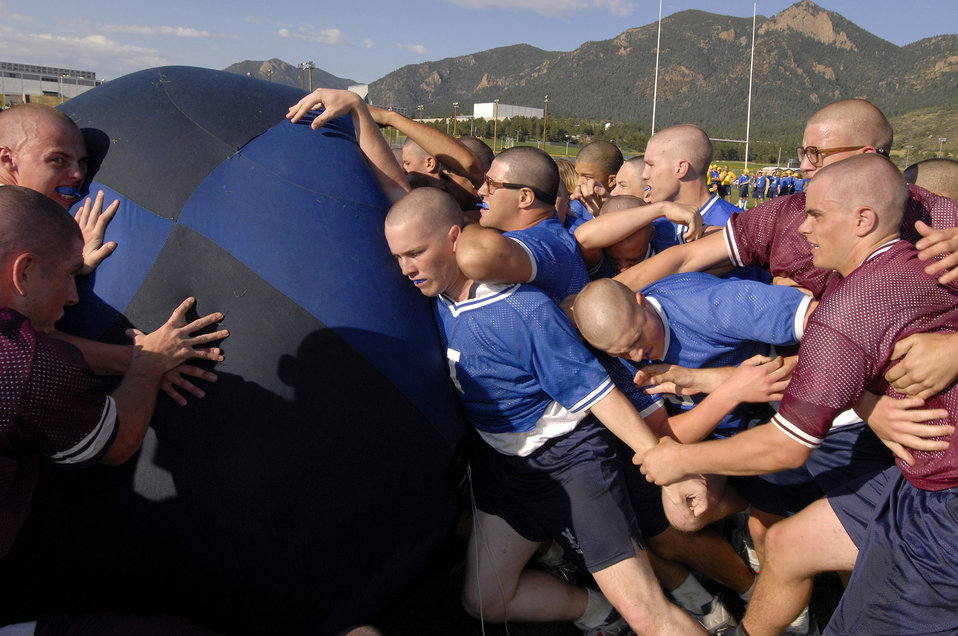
Cadets team up at field day

Basic cadet trainees bunch up playing push ball at Field Day July 14 at the U.S. Air Force Academy in Colorado. Push ball is a highly charged contest where cadets push a large sphere across a goal line. New cadets are in their first month of training at the Academy and are learning honor, discipline and integrity in addition to physical fitness.